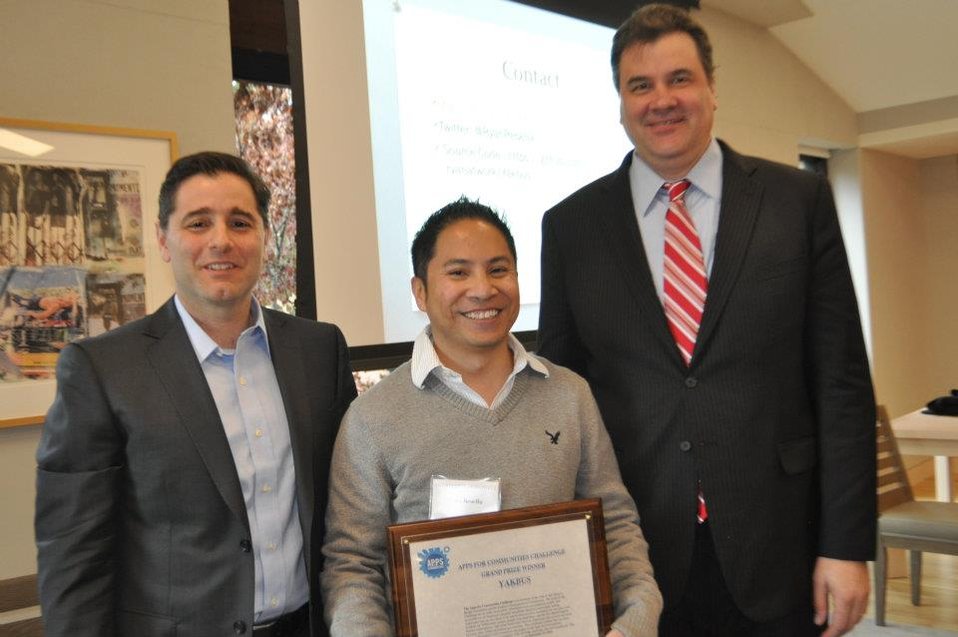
Yak.bus

Chairman Julius Genachowski and Knight Foundation National Program Director Damian Thorman congratulate Apps for Communities grand prize winner, Yak.bus